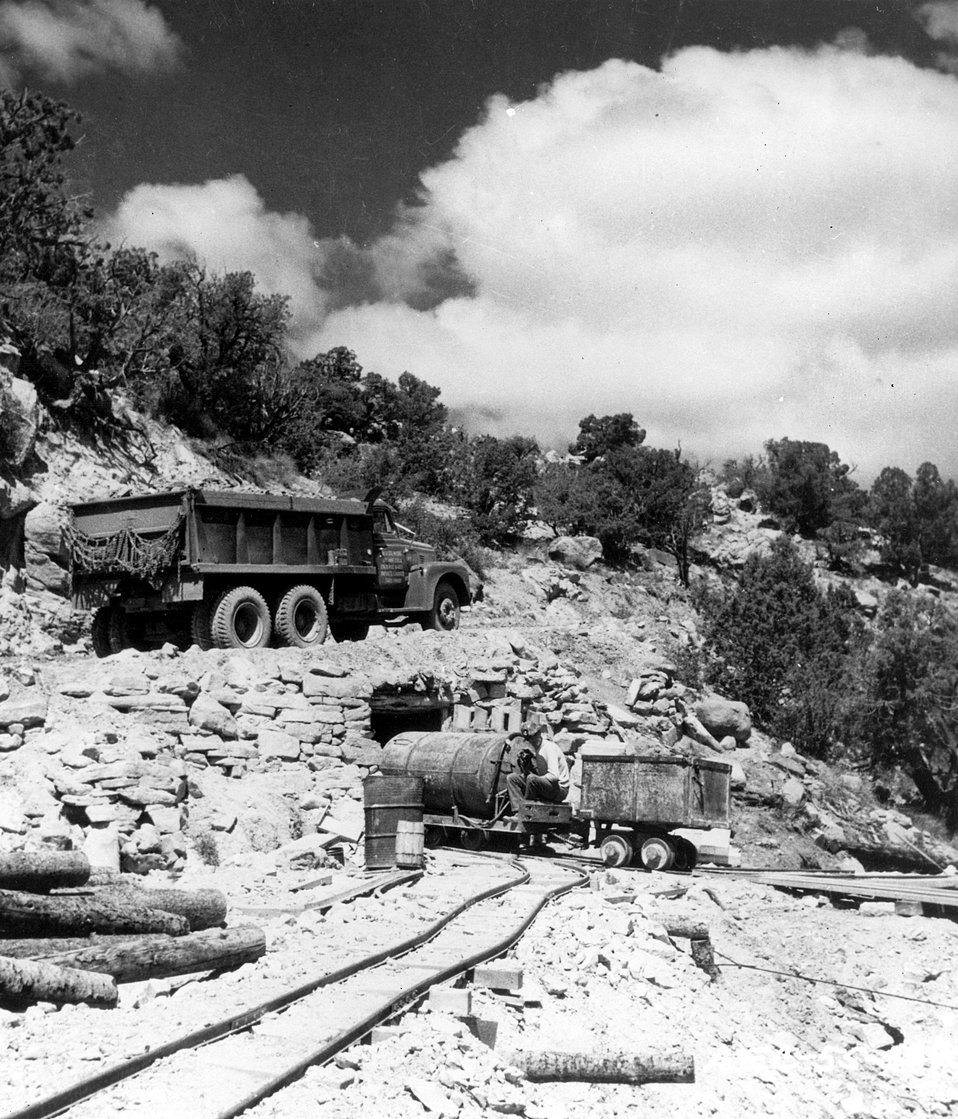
Truck loaded with uranium ore is on way to processing mill while mine car enters mine to pick up more ore. c. 1955